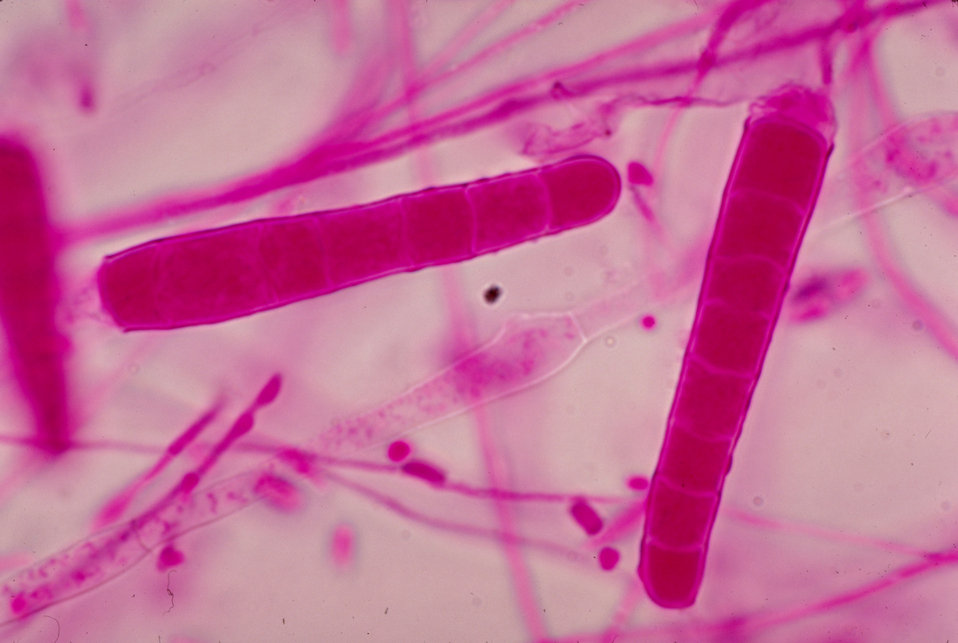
This photomicrograph depicts the microconidia of the fungus Trichophyton mariatii.